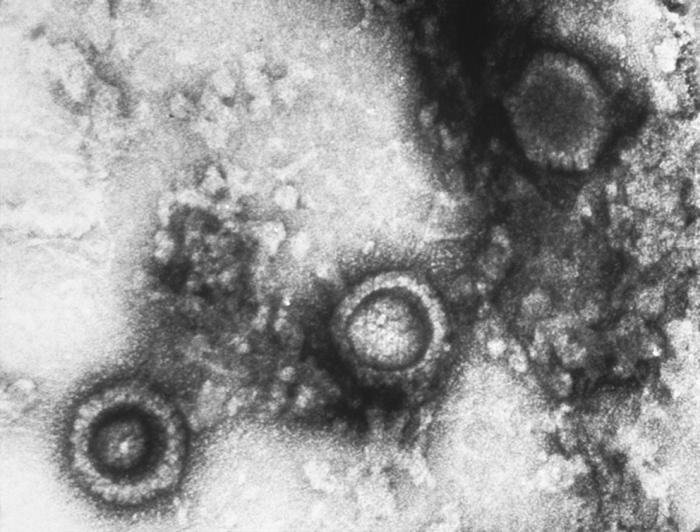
This transmission electron micrograph from a pelleted specimen depicts three icosahedral-shaped herpes virus virions.